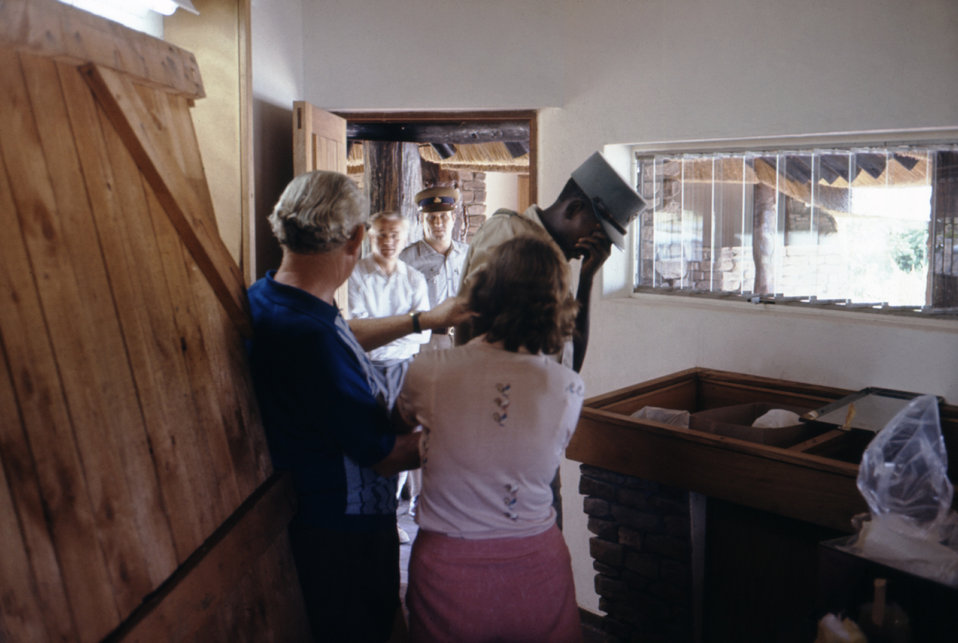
These health officials were taking blood samples from Rhodesian police and railway/road workers during a 1975 Marburg outbreak.